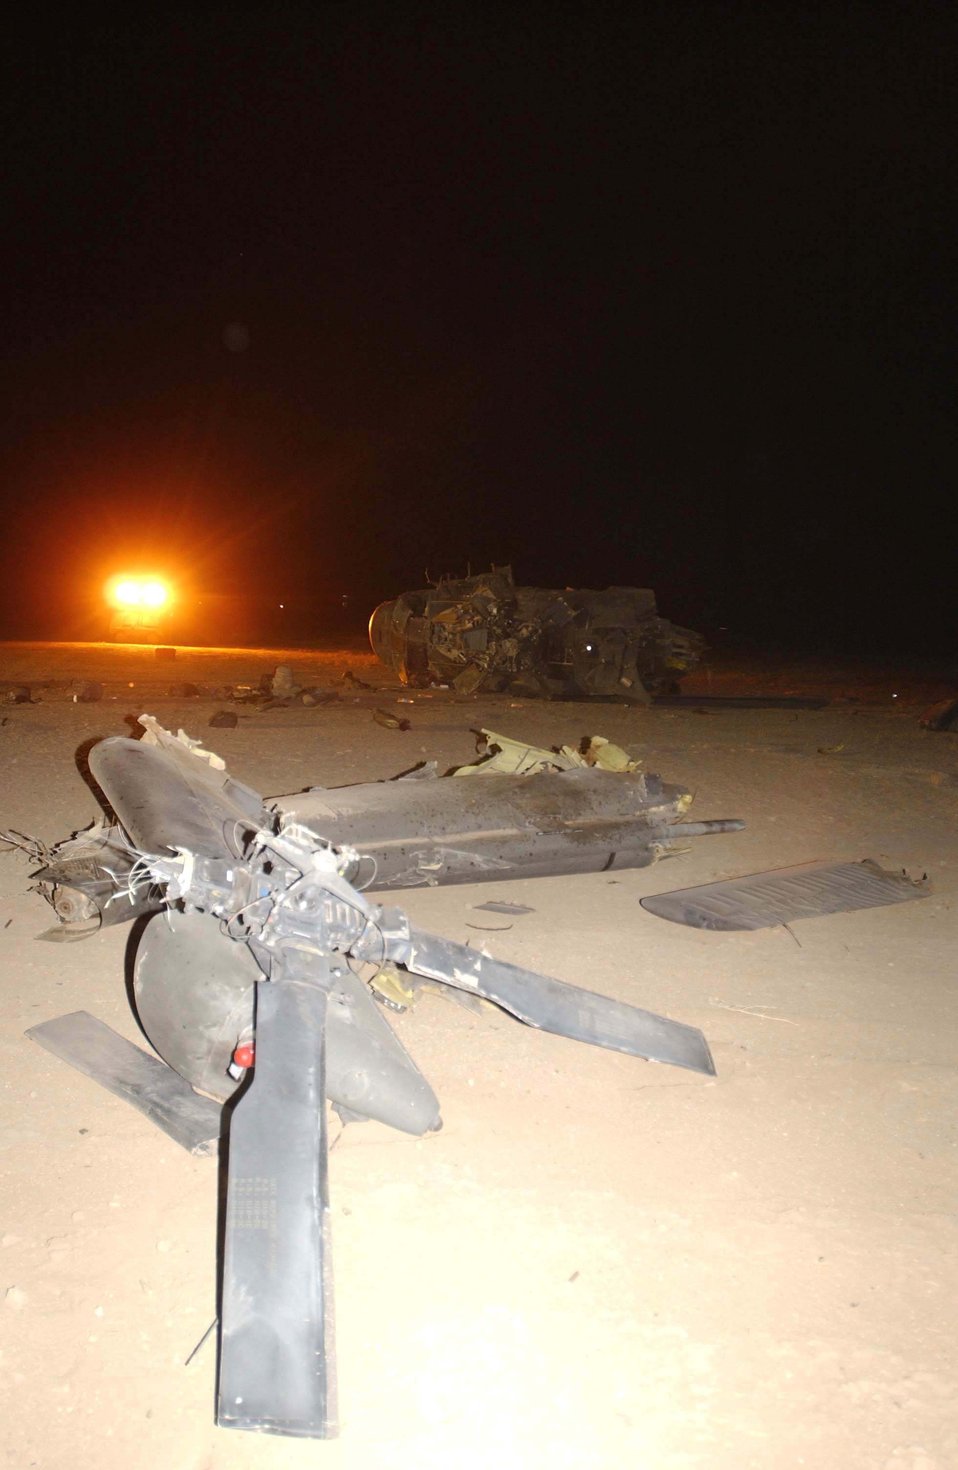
Airmen help save lives following UH-60 crash at Tallil

TALLIL AIR BASE, Iraq -- Lights from a portable lighting cart illuminate the wreckage of an Army UH-60 Blackhawk crash across the flightline here Sept. 21. All four Soldiers on board were rescued from the helicopter by people of the 407th Air Expeditionary Group and 407th Expeditionary Medical Squadron.